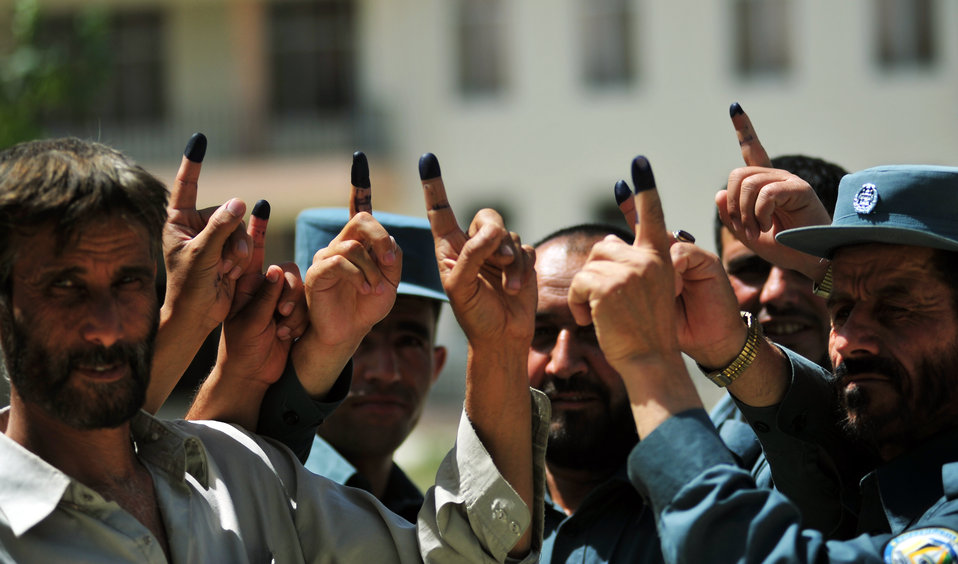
Voters after casting their votes show their inked finger to journalists in Kabul.